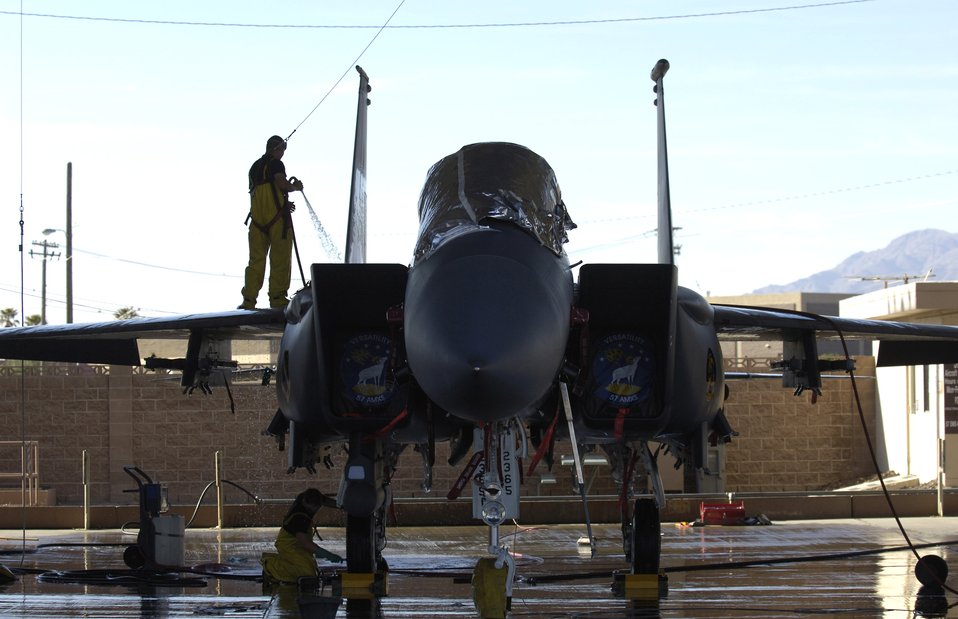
A Strike Eagle gets a bath

Senior Airman Edward Taylor (on aircraft) and Airman 1st Class Dylan Edson wash an F-15E Strike Eagle during a 120-day periodic cleaning March 15 at Nellis Air Force Base, Nev. The complete F-15 cleaning process takes approximately four hours with a crew of three. Airman Taylor, a crew chief, and Airman Edson, an avionics specialist, are both assigned to the 57th Aircraft Maintenance Squadron at Nellis.